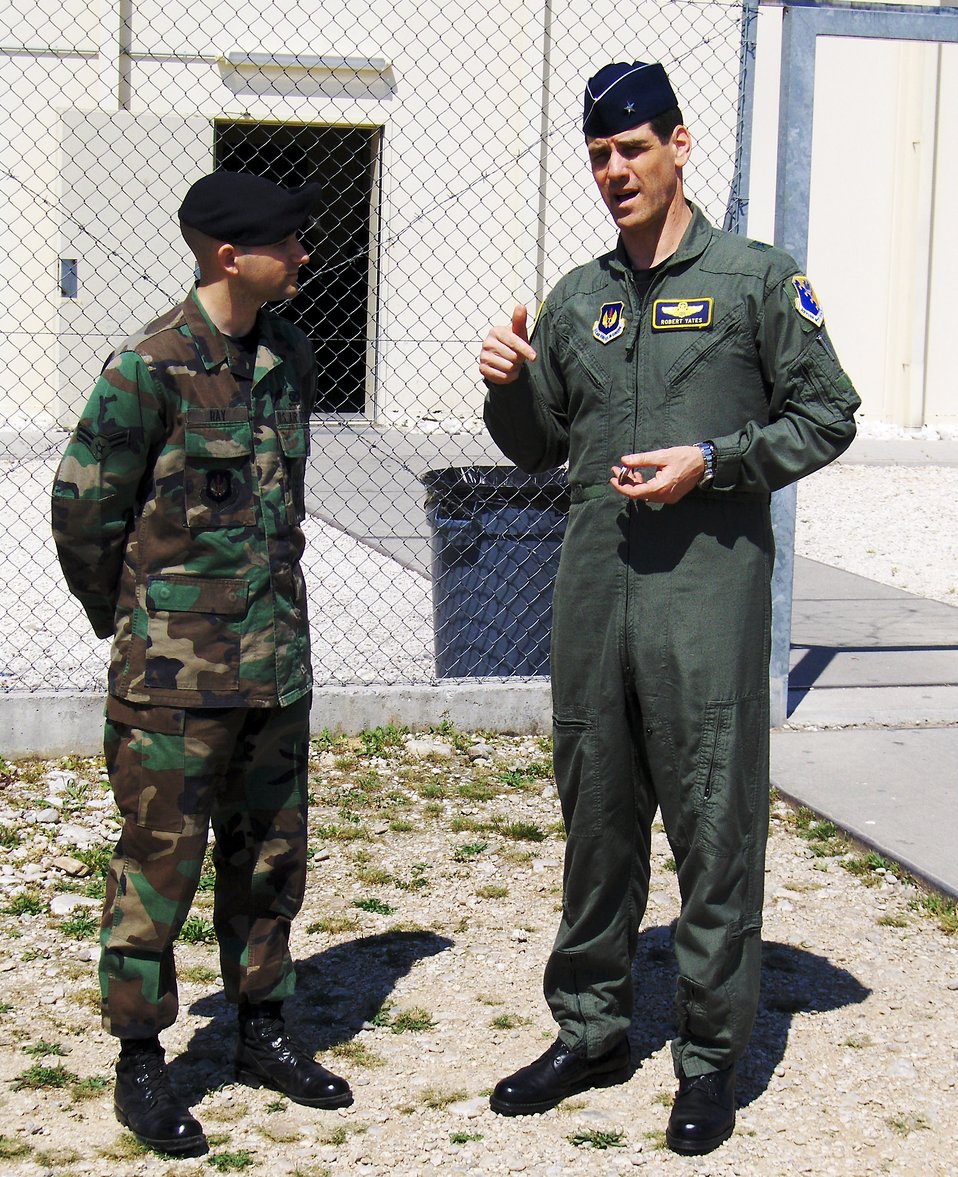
Aviano Airman LEADs way to brighter future

Airman 1st Class Chase Ray receives a coin from Brig. Gen. Robert Yates, the 31st Fighter Wing commander, at Aviano Air Base, Italy, after it was announced April 26 that the 31st Security Forces Squadron's Airman Ray was accepted into the Air Force Academy preparatory school. Through the Leaders Encouraging Airman Development program Airman Ray hopes to be accepted into the Academy where he plans to pursue a degree in international relations and participate on the wrestling team.